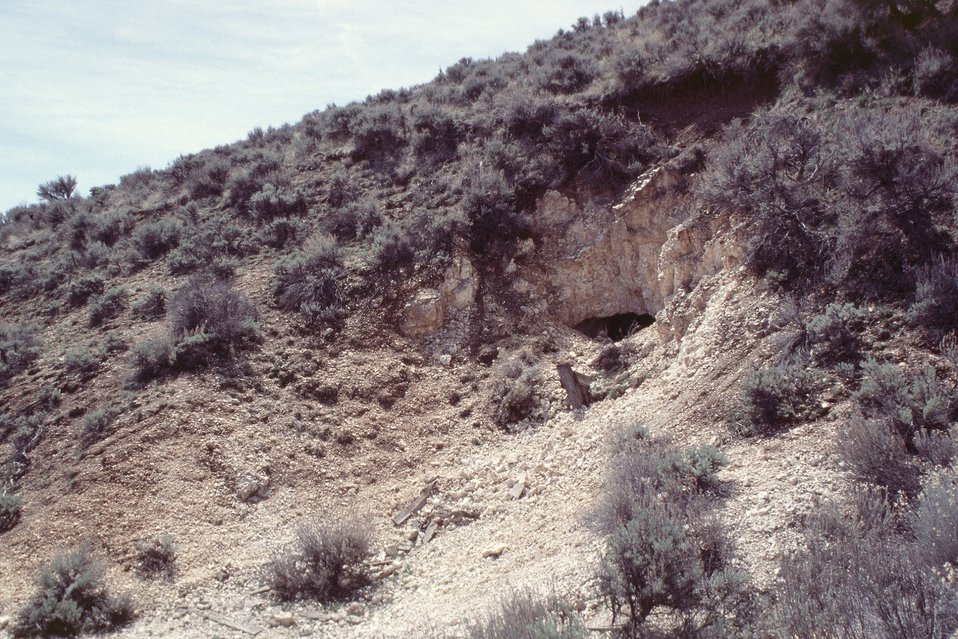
AML Glass Buttes area, G1, Burns District. Abandoned mercury mine adit active in 1957 that is now a winter bat hibernaculum and summer bat roost. A bat grate was installed during 9/2003 to restrict public access and yet allow access for the bats.